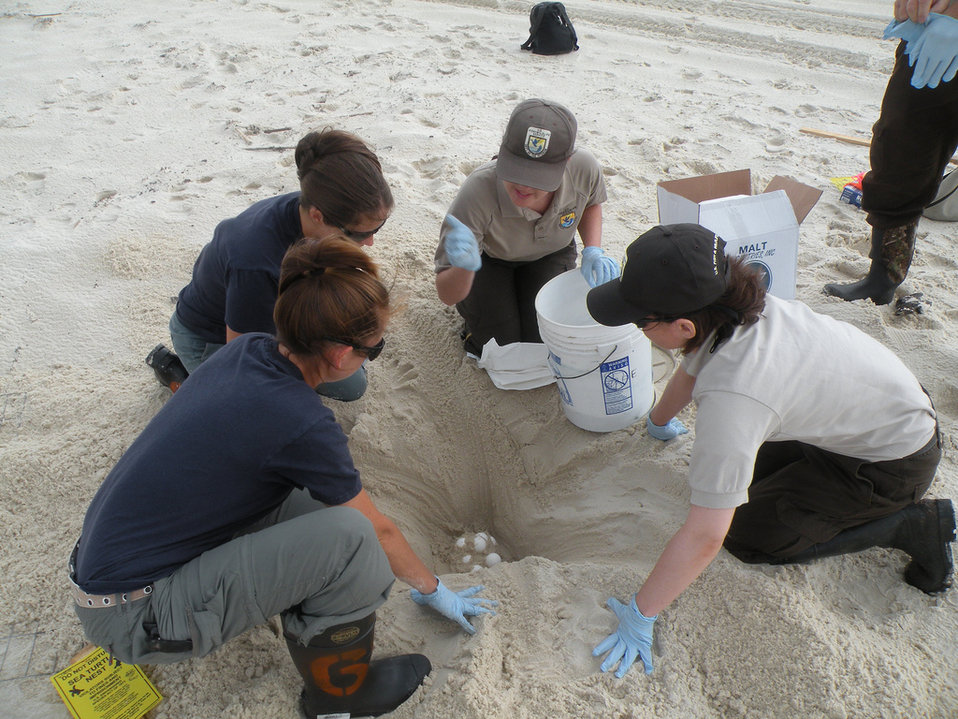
Saving Sea Turtle Eggs Credit: Bonnie Strawser, USFWS